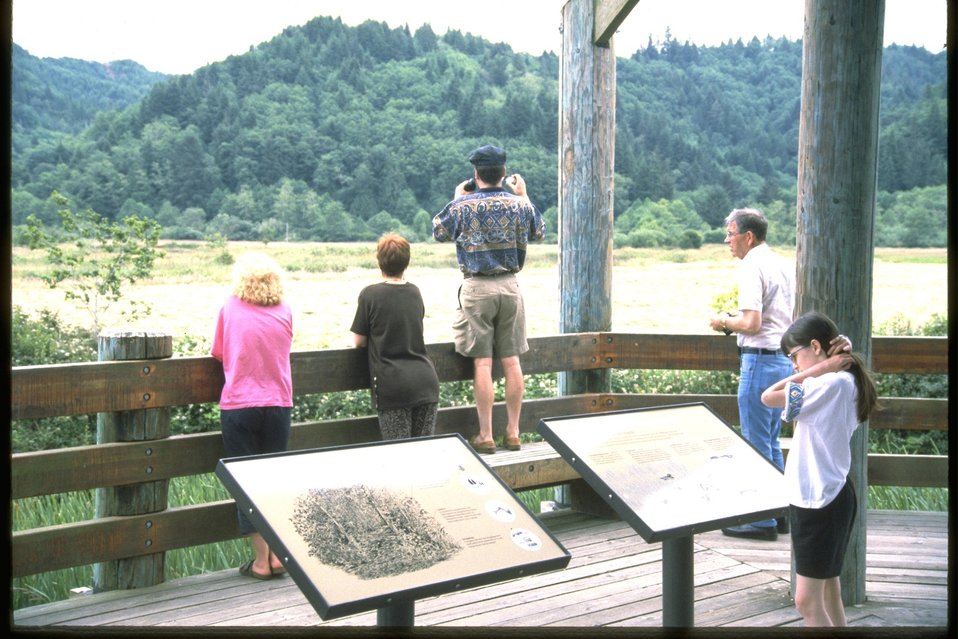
Dean Creek Wildlife viewing area.